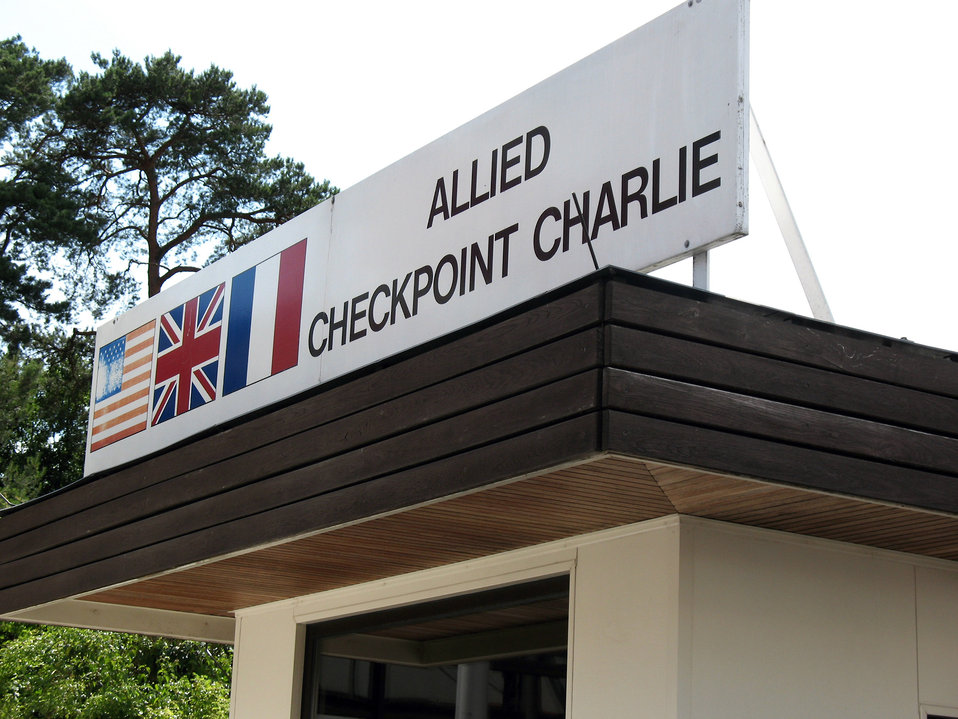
Veterans honor Berlin Airlift's 60th anniversary

The actual